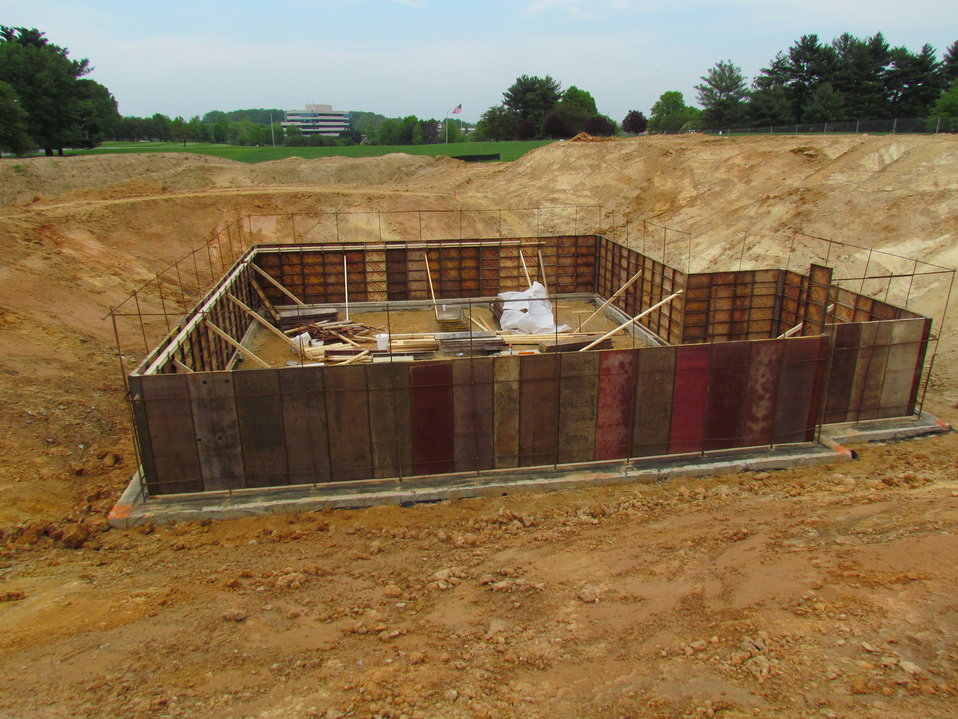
Net-Zero Energy Residential Test Facility - Construction photo showing erection of concrete form walls.